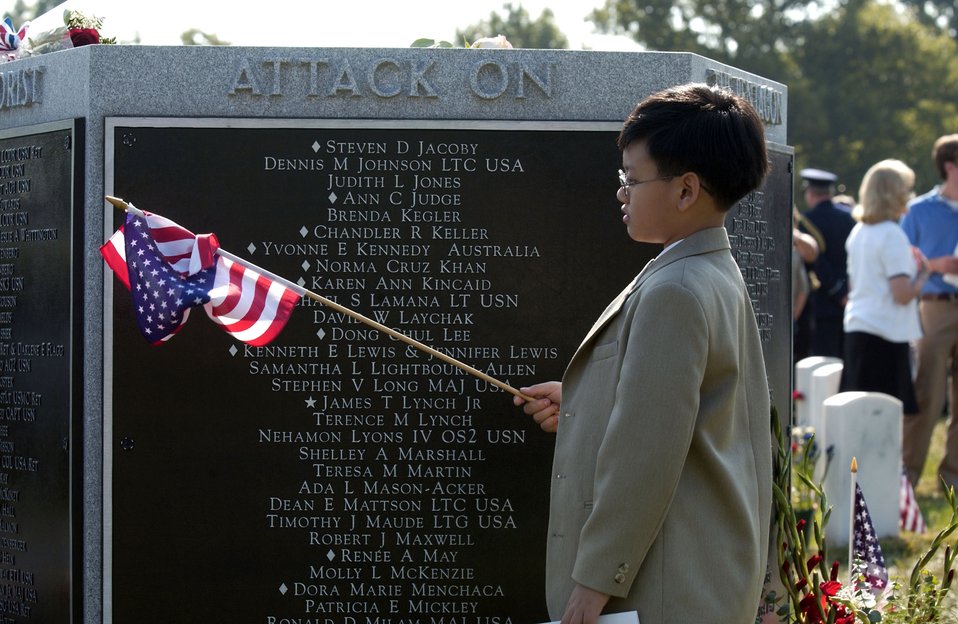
Remembering

ARLINGTON NATIONAL CEREMONY, Va. -- A young boy lays an American flag on a 9/11 memorial marker here Sept. 11. Patriot Day observance wreath laying ceremony honors the victims and families of the Sept. 11, 2001 attacks on the Pentagon, Twin Towers and Flight 93 over Pennsylvania.